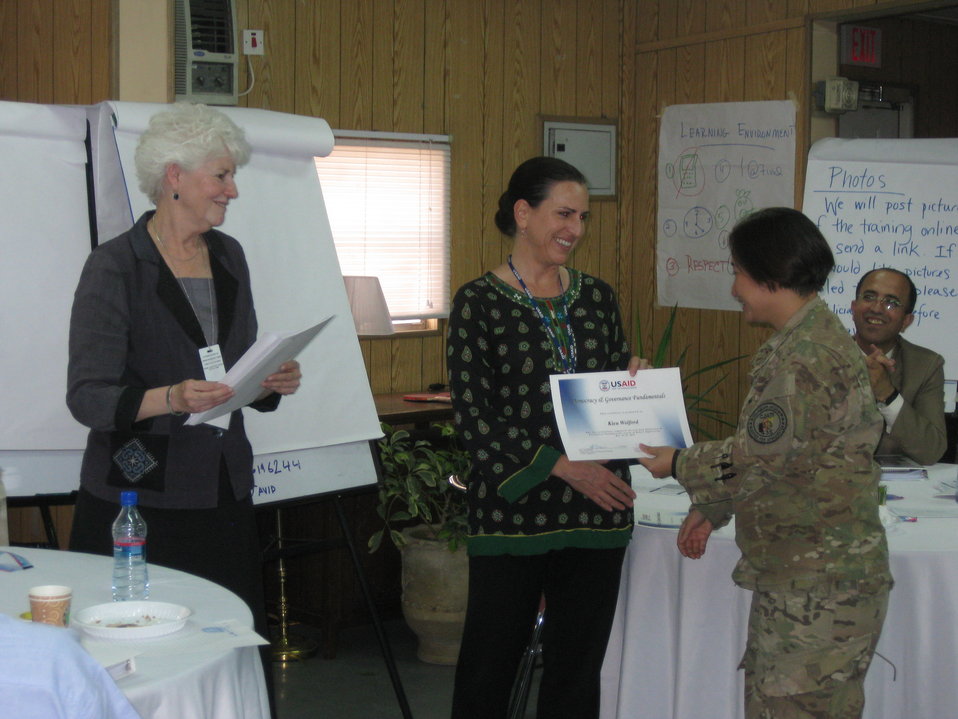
Afghan Youth Voices 064